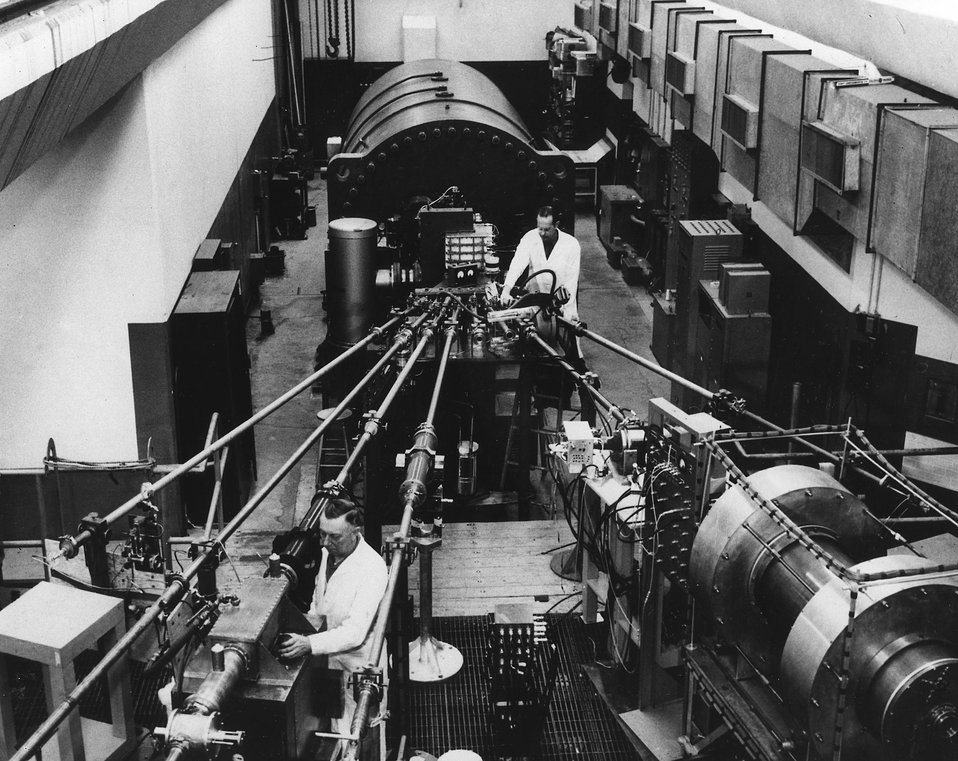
The Van de Graaff accelerator, which produces beams of protons, neutrons (heavy hydrogen nuclei), or alpha particles (helium nuclei) at up to 3 million-electron-volt energies. c. 1962